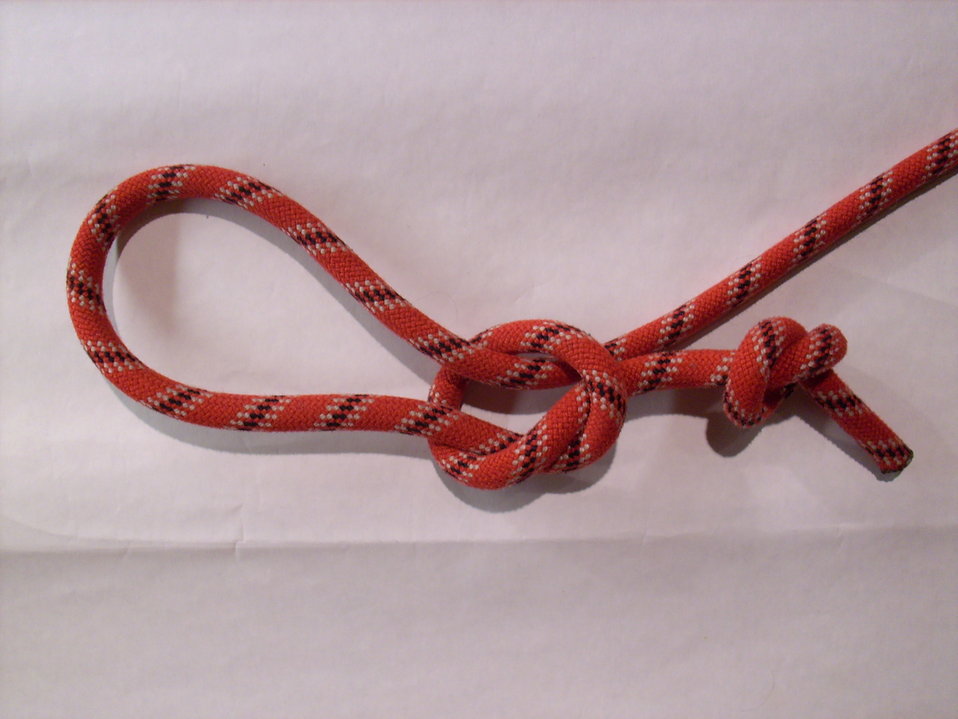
Deutsch: Knoten zum Verschnüren von Paketen